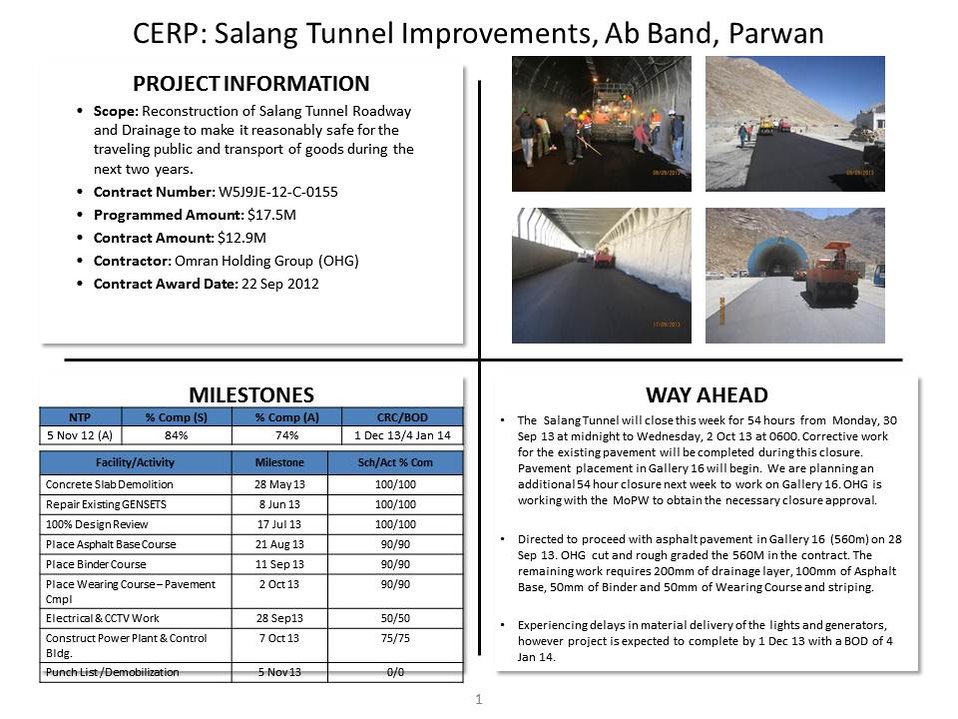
CERP Salang Tunnel Quad